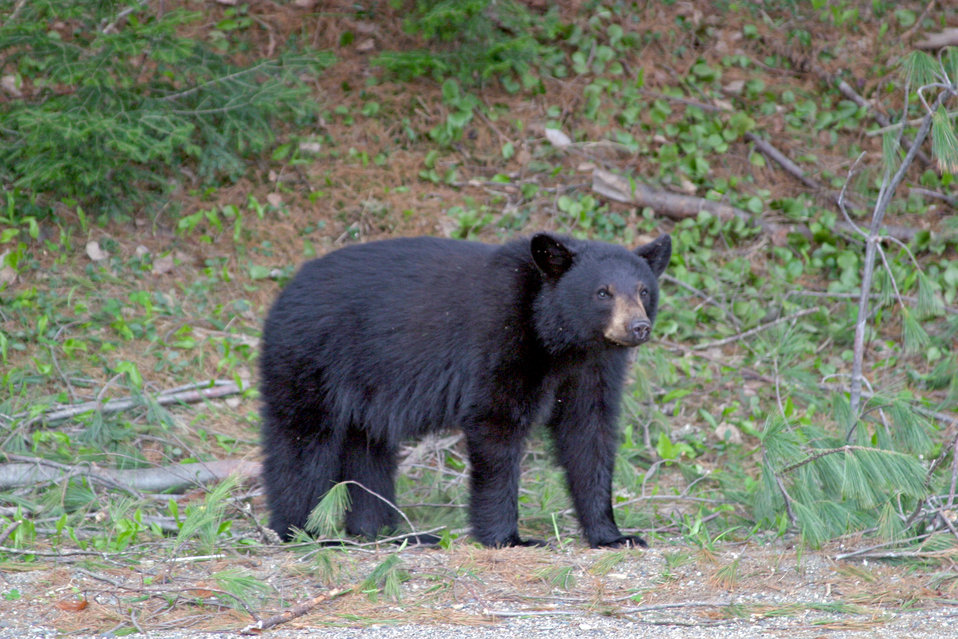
Photo of the Week - Black Bear (ME)

Photo of the Week - 1/20/2014

Bears, such as the one pictured above at Moosehorn National Wildlife Refuge, are protected by the Lacey Act, a federal wildlife protection statute which prohibits the interstate purchase, sale and transportation of wildlife which was obtained in violation of federal, state or local law. Just last week (January 15, 2014), former Maine resident Eric Zeng was sentenced for two counts of violating the Lacey Act, following an investigation of his engagement in the illegal purchase and sale of bear and deer parts. On two occasions, Zeng bought what he was told were illegal obtained black bear gall bladders and bear paws. Zeng was sentenced to two years of probation, ordered to pay a fine of $5,000, and ordered to forfeit his vehicle.

“This sentence represents the gravity of such crimes committed against our wildlife, conservation and the hunting heritage,” said U.S. Fish and Wildlife Service, Northeast Region Special Agent in Charge Honora Gordon. “The case is another fine example of how our partnership with the Maine Warden Service and the Boston U.S. Attorney's Office is crucial in protecting black bears and other North American species from commercial exploitation.'